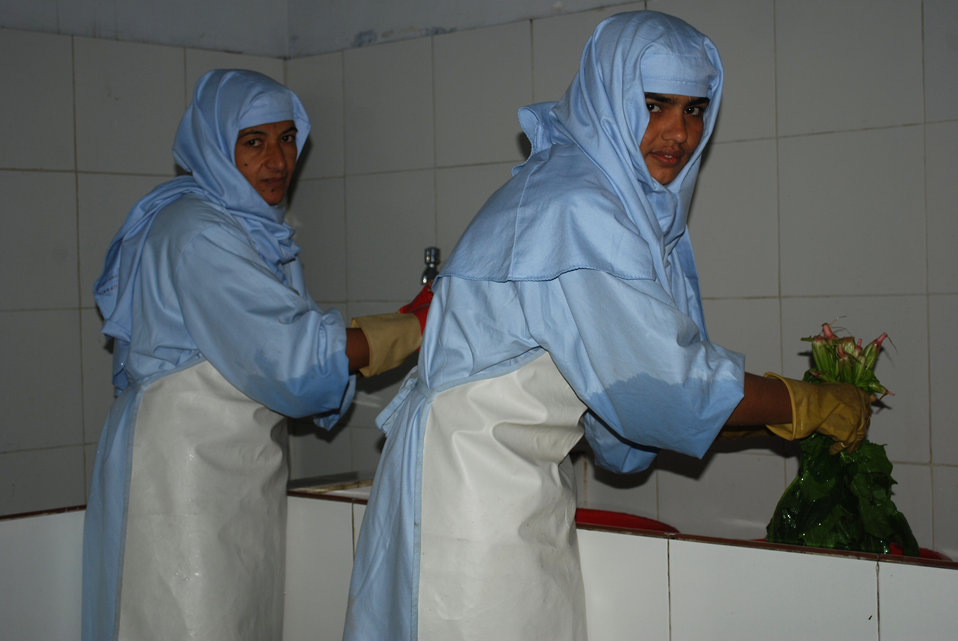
'On the Road' in Nangarhar Province